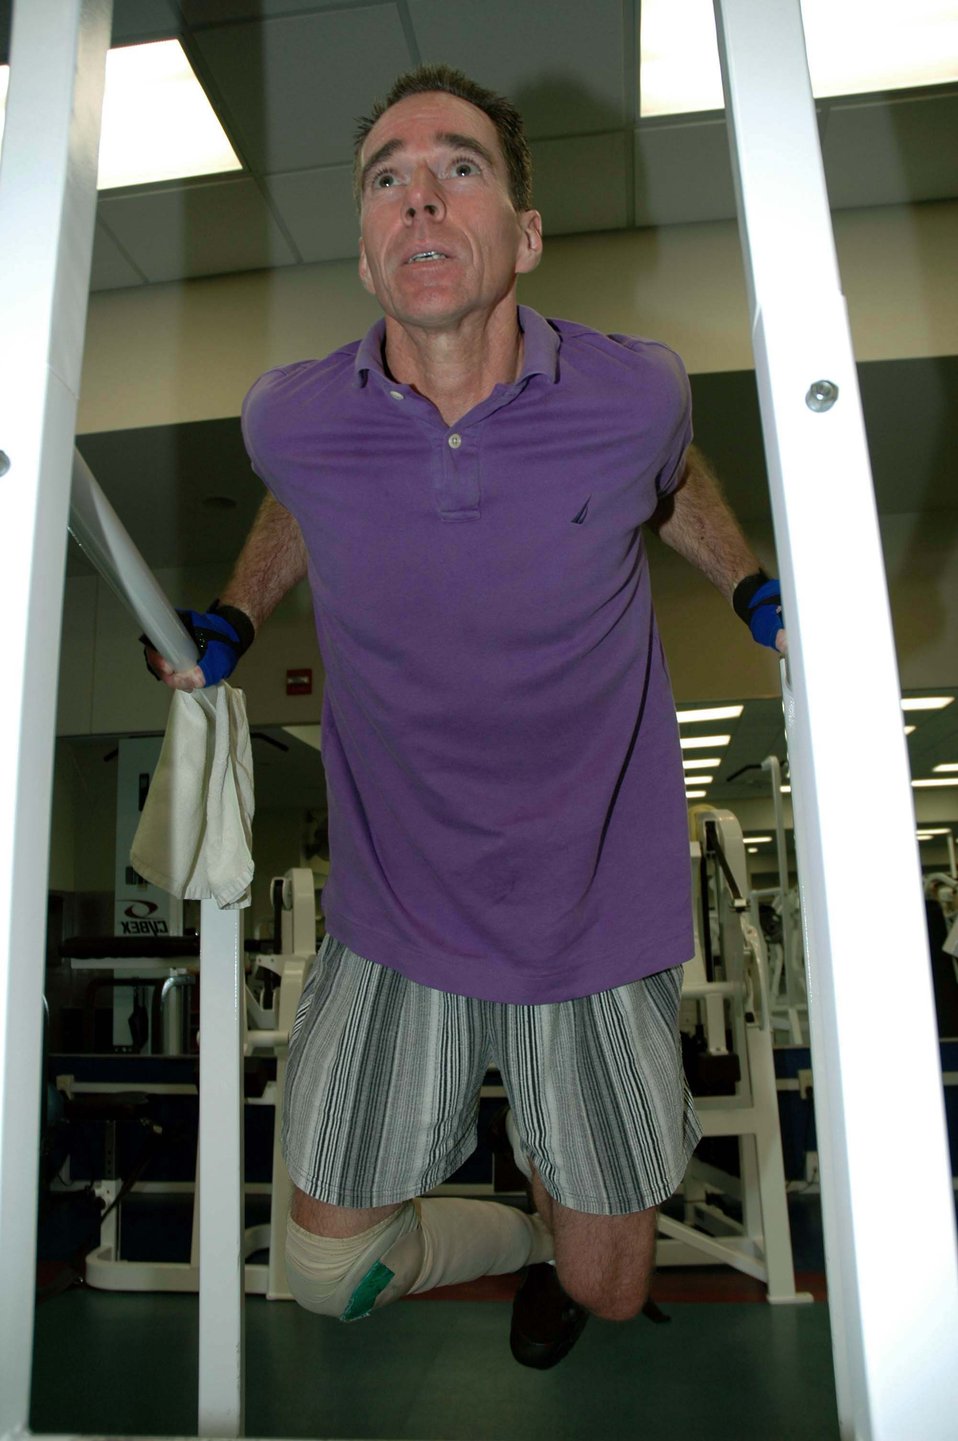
AAFES worker uses fitness center daily despite prosthetic leg

OSAN AIR BASE, South Korea -- Terry Mallon uses the dip bar for a workout at the fitness center here. Despite his prosthetic leg, he completes a vigorous workout daily. He is an Army and Air Force Exchange Service security technician.